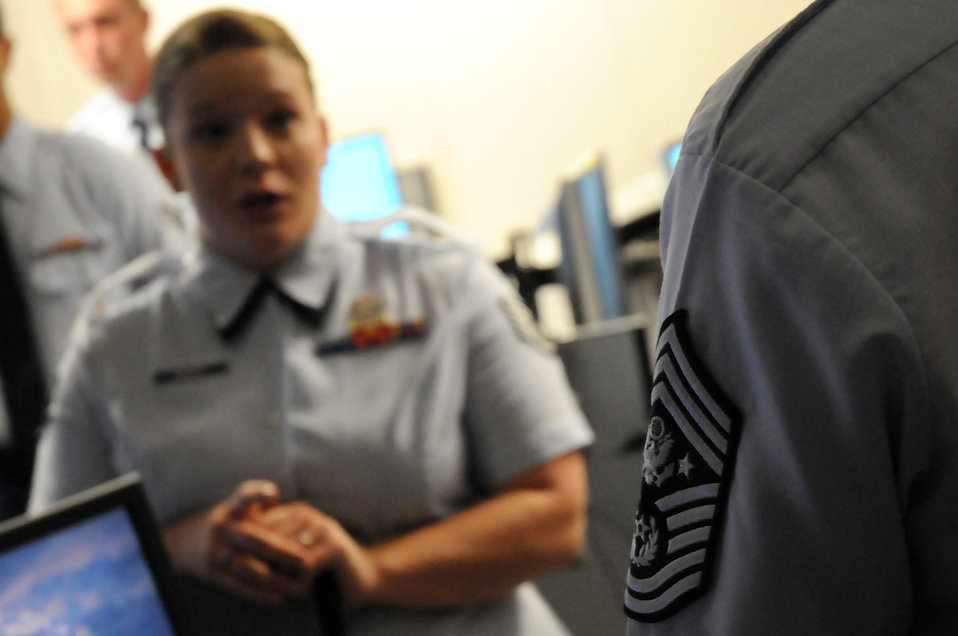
Straight from the chief

Staff Sgt. Lauren Krapfl briefs Chief Master Sgt of the Air Force Rodney J. McKinley during his Sept. 8 visit to Wright-Patterson Air Force Base, Ohio. During his visit, the chief visited with enlisted, officer and civilian employees and answered questions from Airmen. He is the 15th chief master sergeant of the Air Force. Sergeant Krapfl is assigned to the National Air and Space Intelligence Center.